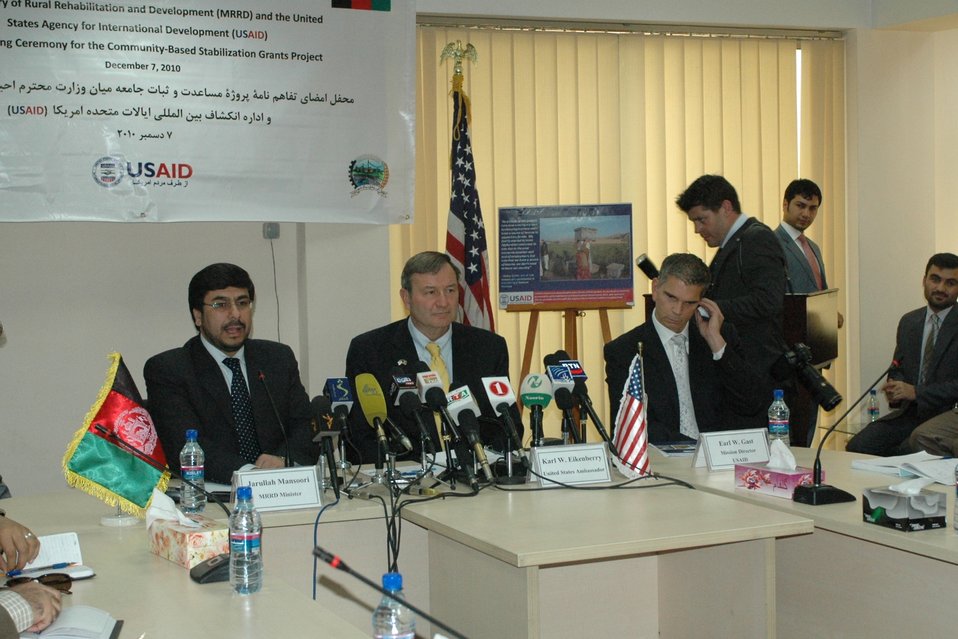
Community Based Stabilization Grants Ceremony, December 7, 2010